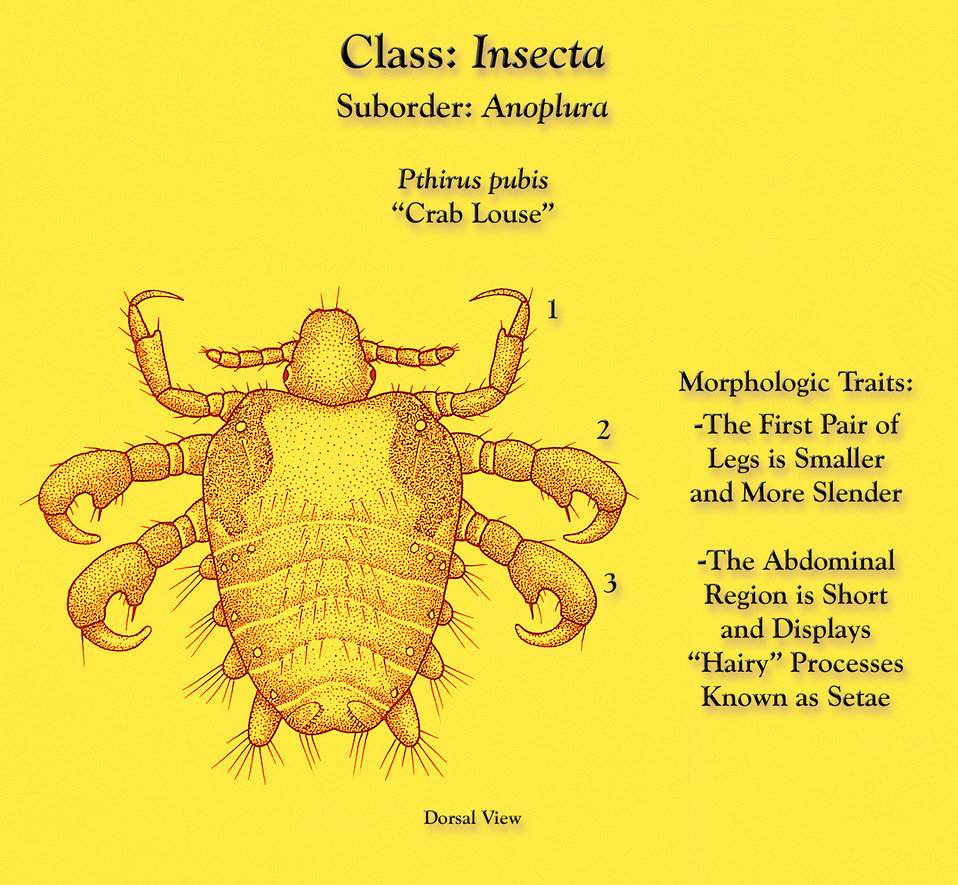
This illustration depicts a dorsal view of a 'crab louse', Pthirus pubis, a member of the suborder Anoplura, or 'sucking lice'.